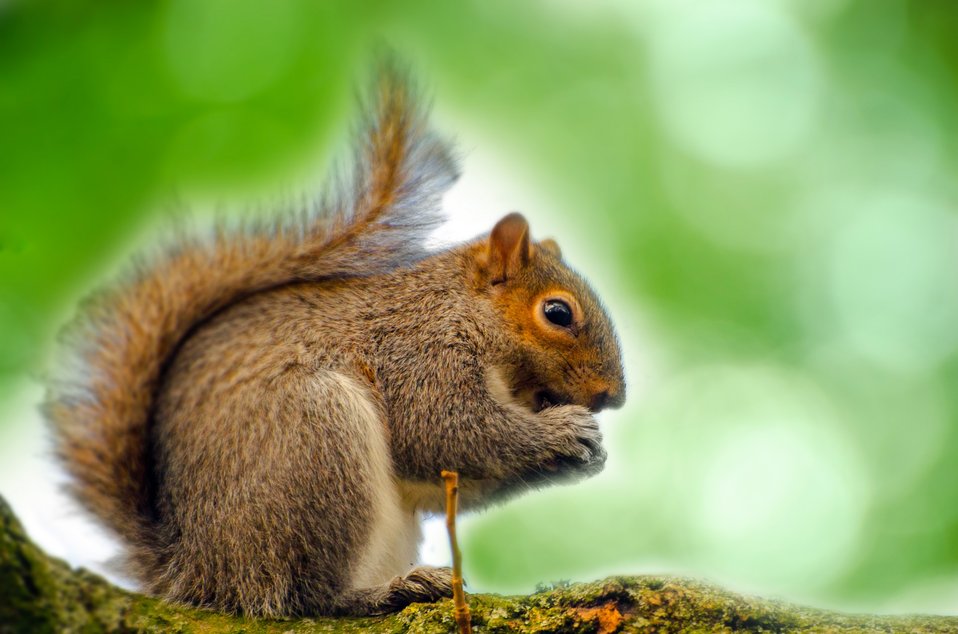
Squirrel sitting on the branch.